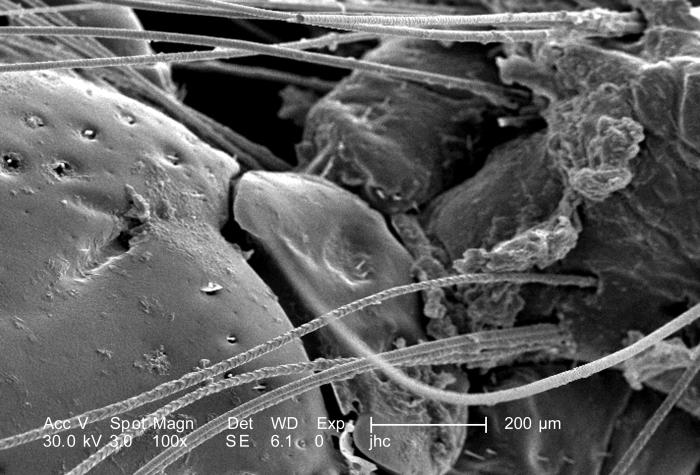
Under a low magnification of 100X, this scanning electron micrographic (SEM) image depicted a dorsal view of an unidentified engorged female tick, which had been extracted from the skin of a pet cat while in the process of obtaining its blood meal. Note the presence of some of the cat's fur, along with some of its skin tissue in which the tick's gnathosoma were still embedded. See PHIL 9972 and 9973 for additional, less magnified views of this scenario. It is from the 'basis capituli' that the two spread 'pedipalps', and hidden skin-piercing hypostome and 'chelicerae' emanate. On the dorsal surface of the basis capituli you'll see two depressed areas known as the 'porose areas', through which secretions produced by dermal glands are released.